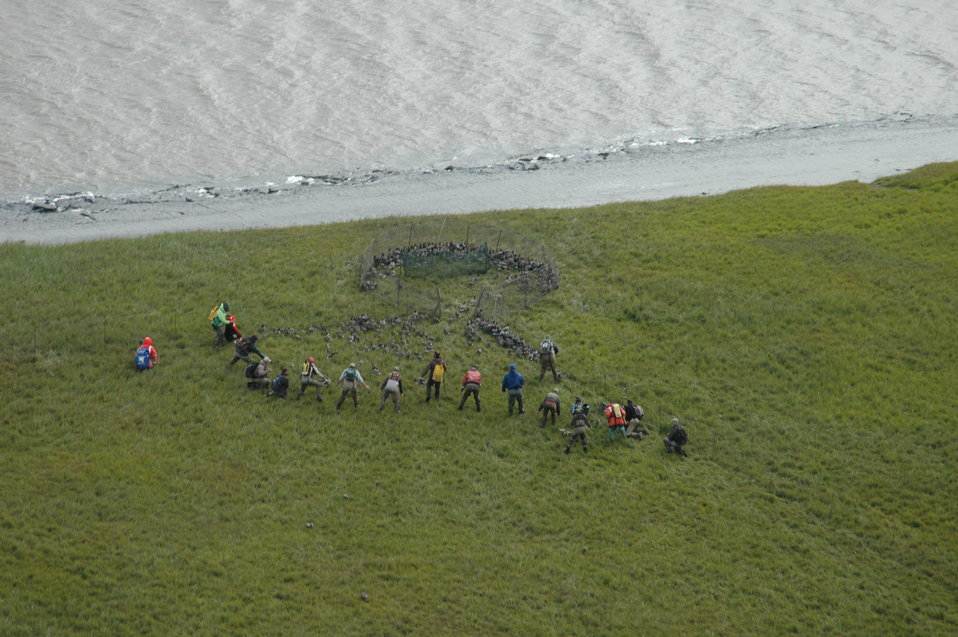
Rounding up Geese

A group of biologists, volunteers, biotechs, refuge staff, migratory bird management staff, etc joined forces to band and collar cackling cackling geese on the Yukon-Kuskokwim Delta.

One of the operations involved pushing family flocks into a large catch pen.

USFWS Yukon Delta NWR